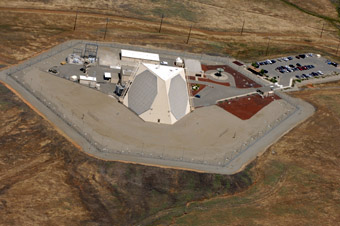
Beale Airmen guide interceptor to destroy missile

Airmen of the 7th Space Warning Squadron have a primary mission of missile warning, a corollary mission of missile defense, and secondary mission of space surveillance in support of space superiority at Beale Air Force Base, Calif. The 7th SWS is a geographically separated unit of the 21st Space Wing at Peterson AFB, Colo.